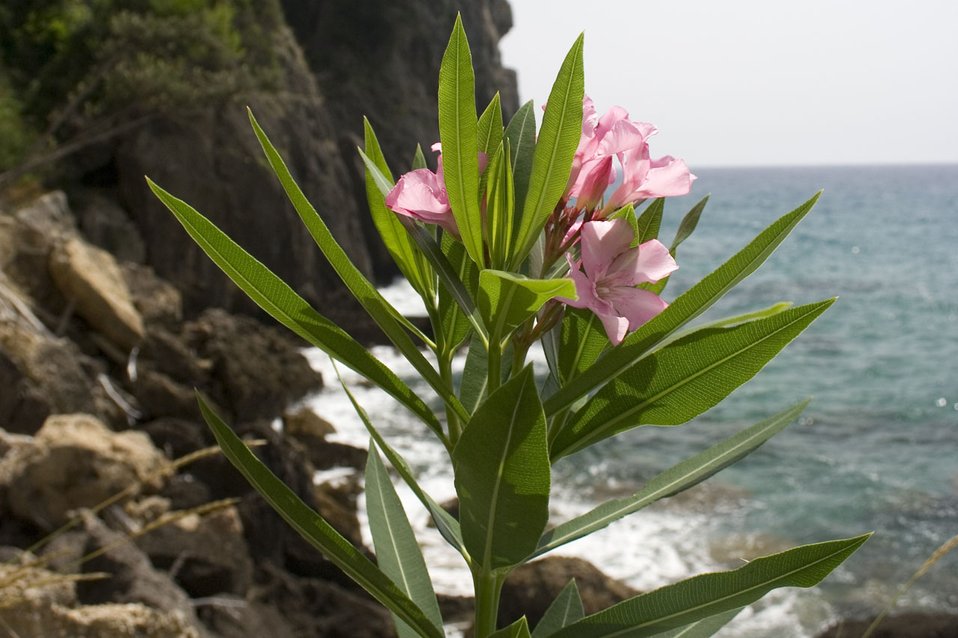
Flower on beach

Flower by the sea.